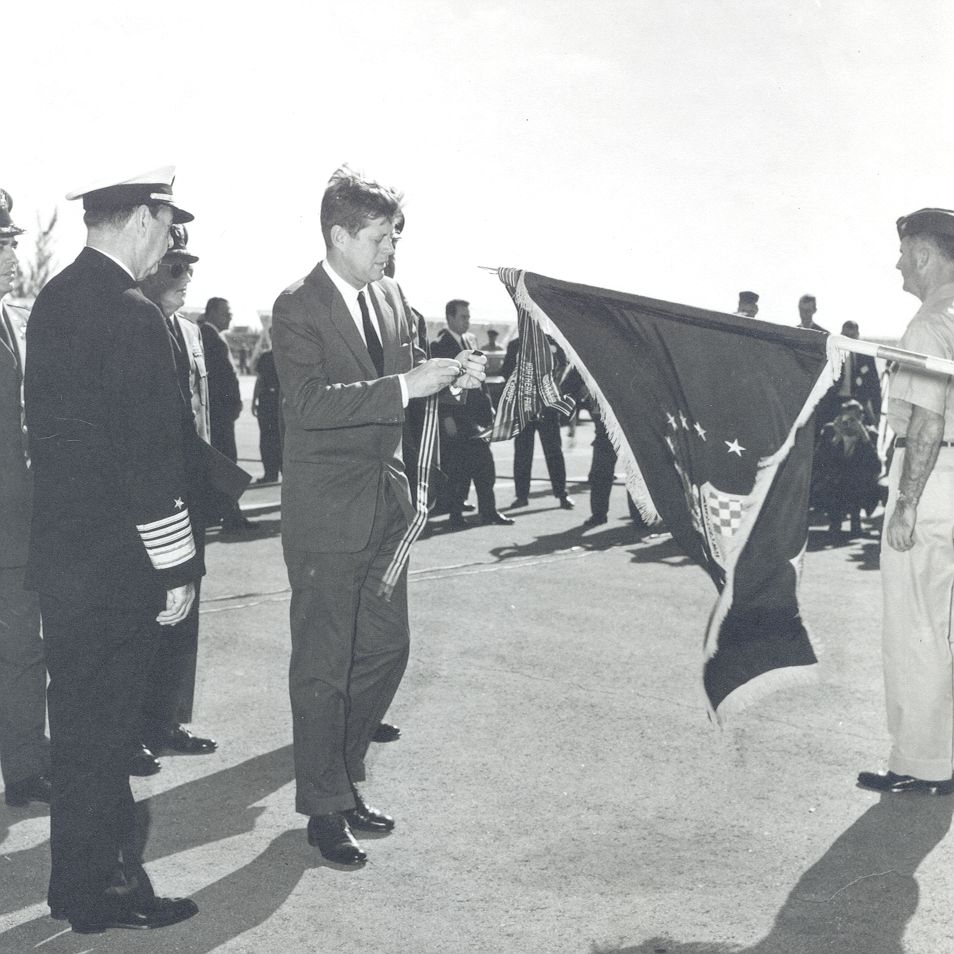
Stand-up of training group marks an international homecoming

President John F. Kennedy places a streamer on the colors of the 363rd Tactical Reconnaissance Wing to present the Air Force Outstanding Unit Award in recognition of the unit's actions associated with the Cuban Missile Crisis. The 363rd, activated once again March 26 as a training group on an air base in the Persian Gulf region, follows in the historic footsteps of the 363rd TRW.